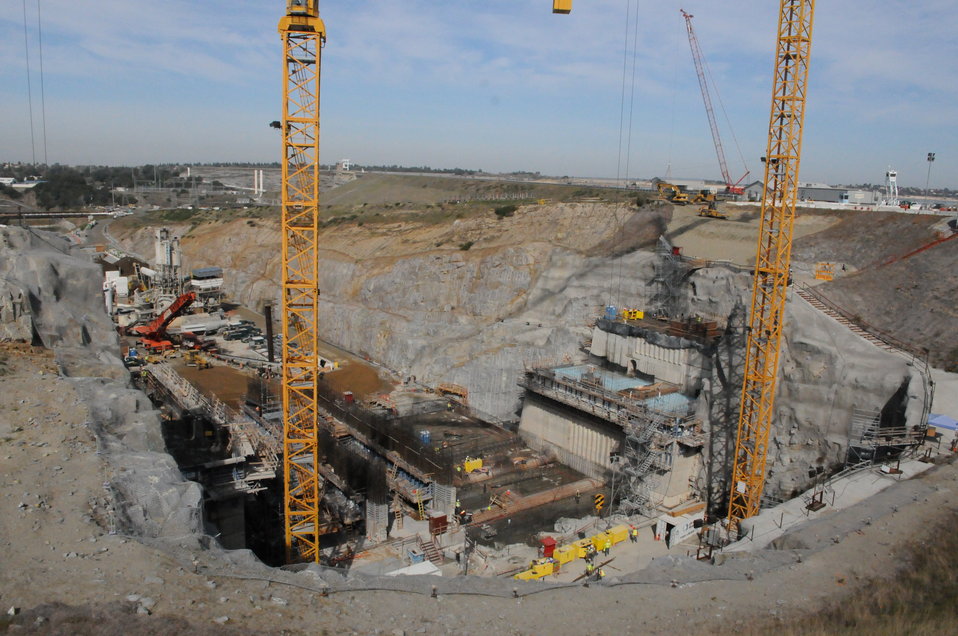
Placing Steel Rebar

Contractors working for the Sacramento District construct the support system for the rising Folsom Dam auxiliary spillway on March 14. The control structure—essentially a second dam—will stand as tall as the Statue of Liberty upon completion, estimated in October 2017, and will help reduce the risk of flooding in the Sacramento region.